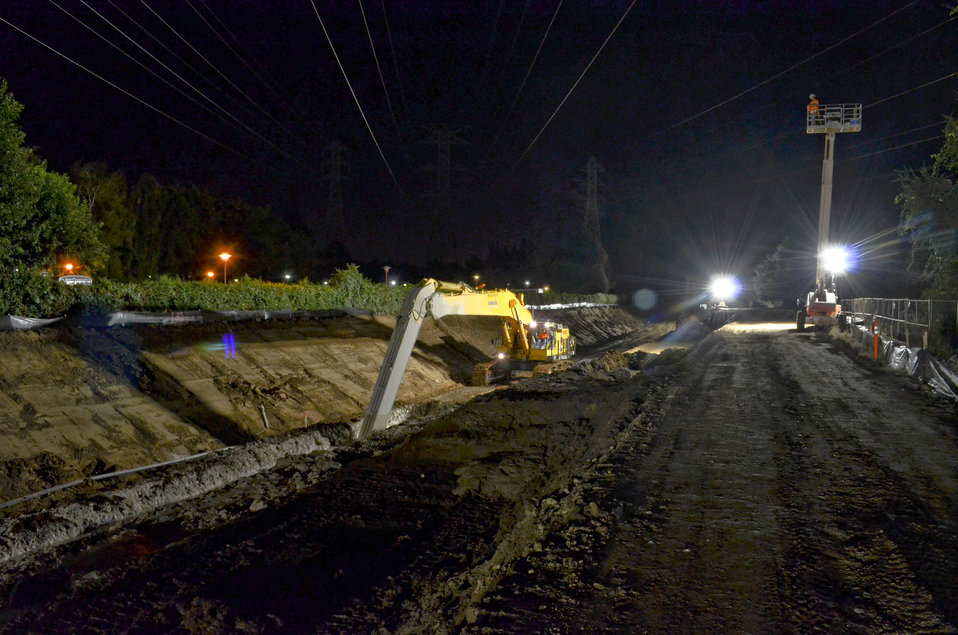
Seepage cutoff wall nighttime construction along the American River

Construction crews work in darkness--when energy demand is lowest--on a stretch of American River levee near the California State University-Sacramento campus Sept. 12, 2012 to close a 900-foot-long gap in a seepage cutoff wall underneath high power lines.
The Corps has built more than 20 miles of seepage walls into American River levees since 2000. Areas where construction was complicated by utilities, bridges or power lines were set aside for later construction.
The project is part of the American River Common Features project, a joint flood risk reduction effort between the Corps, the state’s Central Valley Flood Protection Board/Department of Water Resources and the Sacramento Area Flood Control Agency.